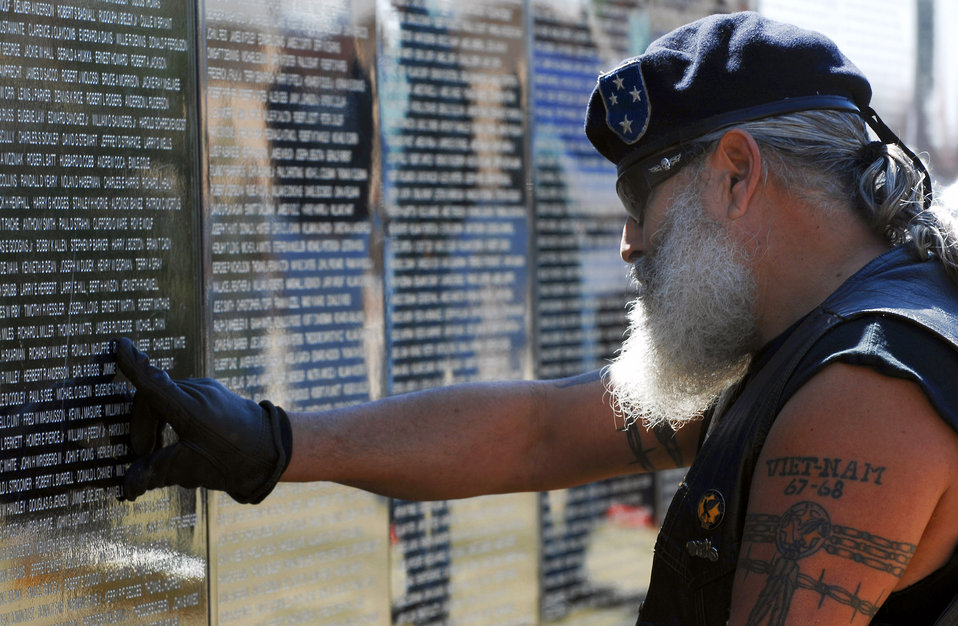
Traveling Vietnam Wall arrives in Clovis

Veteran Rudy Garcia stops at a spot on the traveling Vietnam Wall in Clovis, N.M., March 15 to remember and honor the memories of his friends who gave their lives during the Vietnam War. The Wall is transported around the country to give people who otherwise may not be able to make the trip to Washington D.C. the opportunity see the Wall in their home town and pay their respects. The Wall was on display in Clovis, home of Cannon Air Force Base, from March 14 to 18.